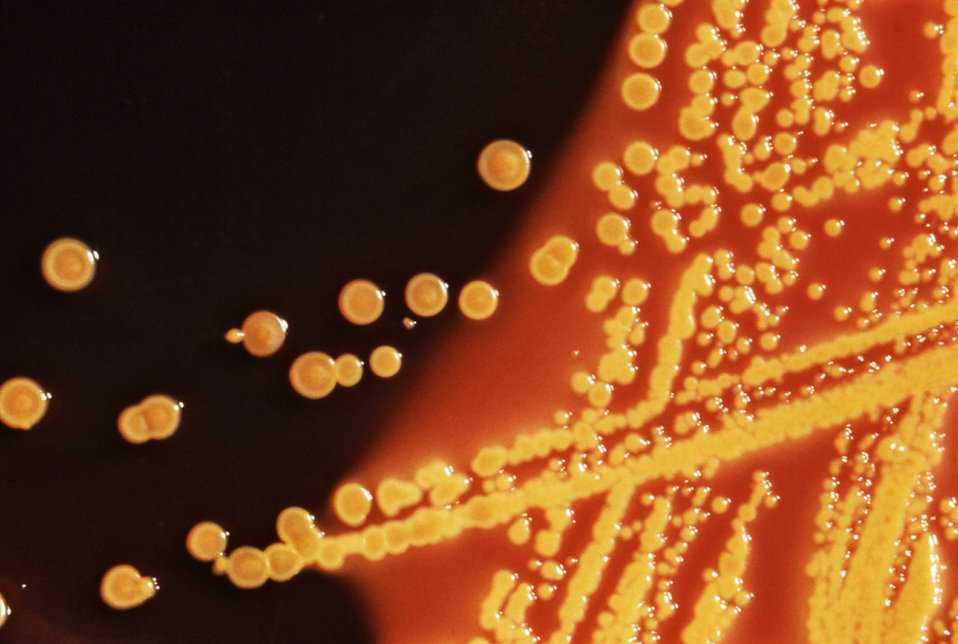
These are colonies of Escherichia coli bacteria grown on a Hektoen enteric (HE) agar plate medium; colonies of E. coli grown on HE agar display a raised morphology, and are yellow, to orange-yellow in coloration.